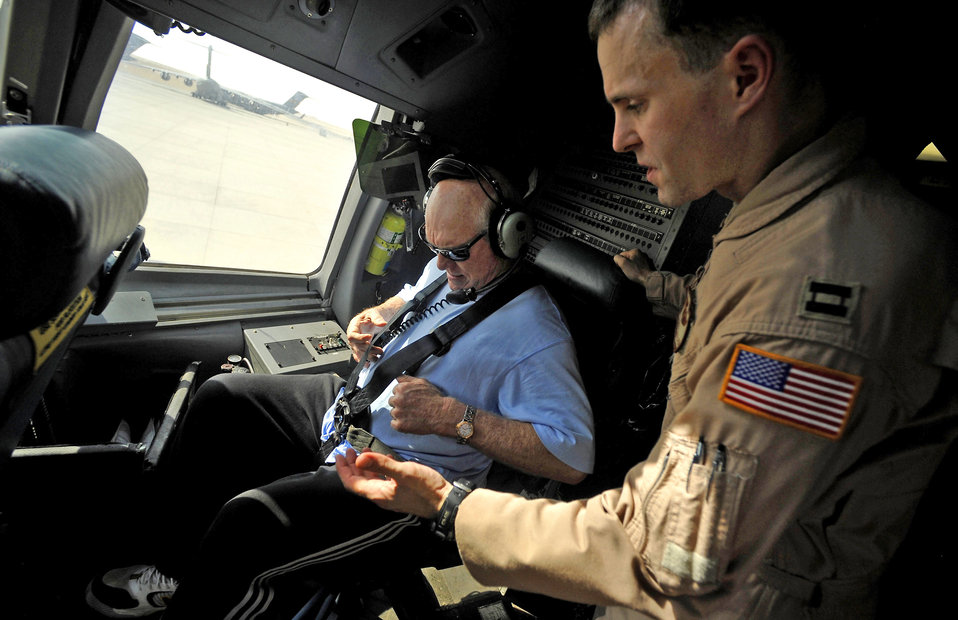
C-17 aircrew scores touchdown in mission with NFL greats

Capt. David Huffsteler (right) assists Terry Bradshaw with a co-pilot seatbelt on board a C-17 Globemaster III Nov. 5, 2009. Mr. Bradshaw, former quarterback with the Pittsburgh Steelers, was in the cockpit during takeoff of an airdrop mission. Captain Huffsteler is a C-17 Globemaster III pilot assigned to the 816th Expeditionary Airlift Squadron and deployed to Southwest Asia.